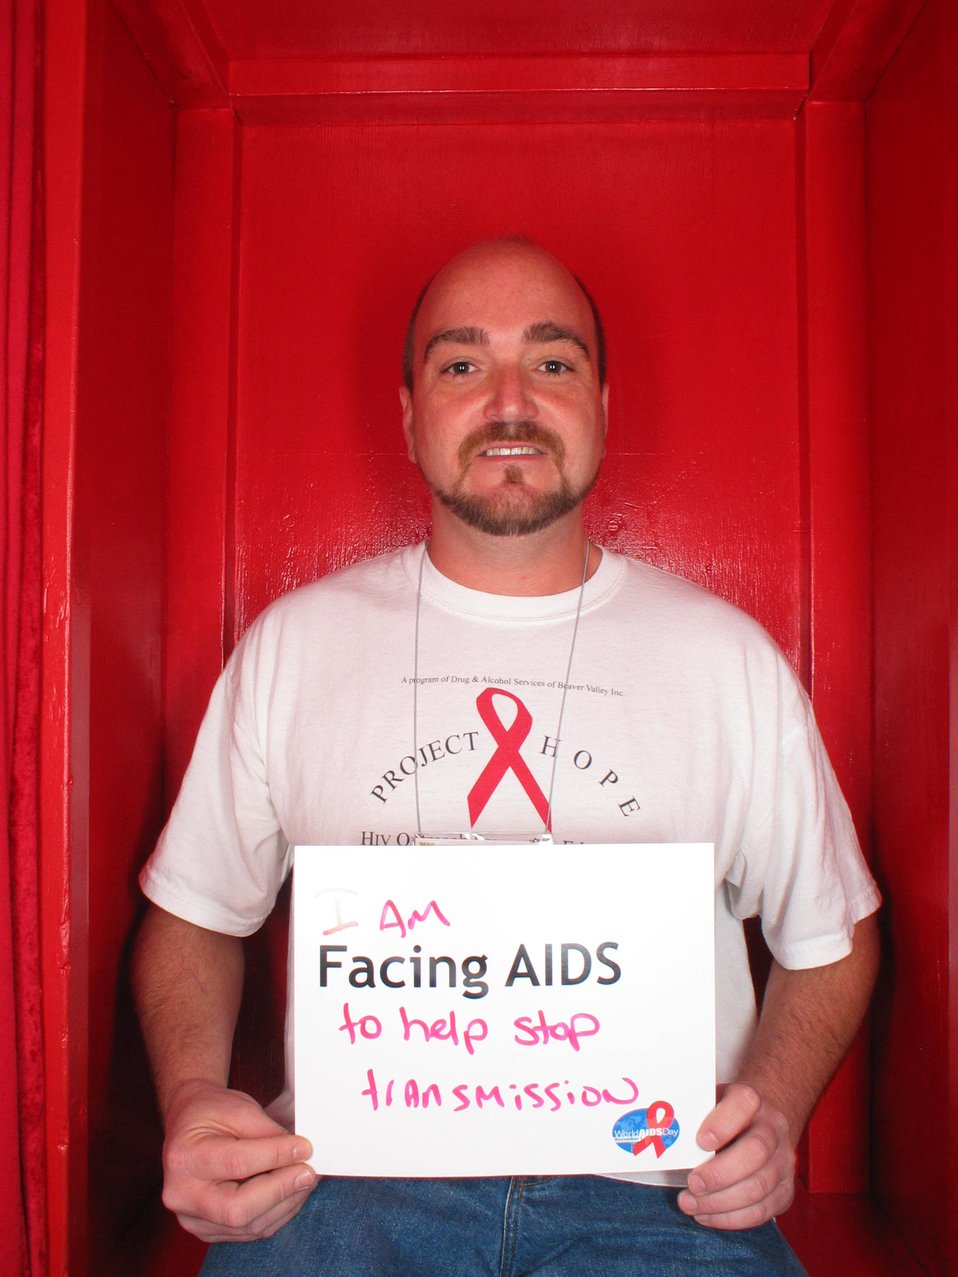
I am Facing AIDS to help stop transmission.